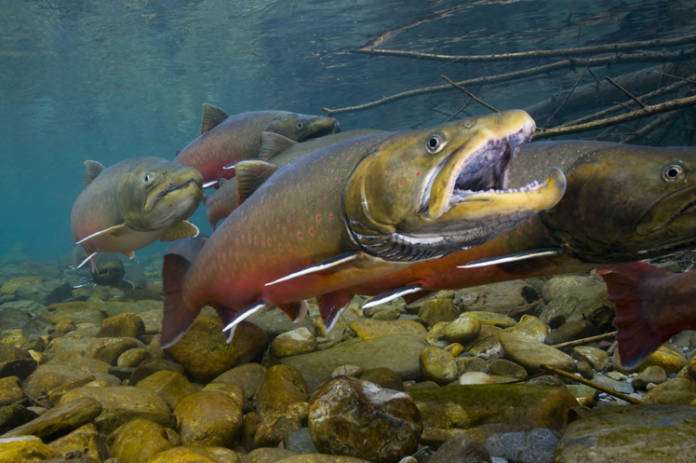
Bull Trout

Region 6 bull trout coordinator, Wade Fredenberg, teamed with noted Geographic photographer Joel Sartore in 2009 to capture underwater and aquarium-staged shots of bull trout in British Columbia’s Wigwam River drainage, the headwaters of the Kootenai River, known as the “crown jewel” of bull trout spawning areas.